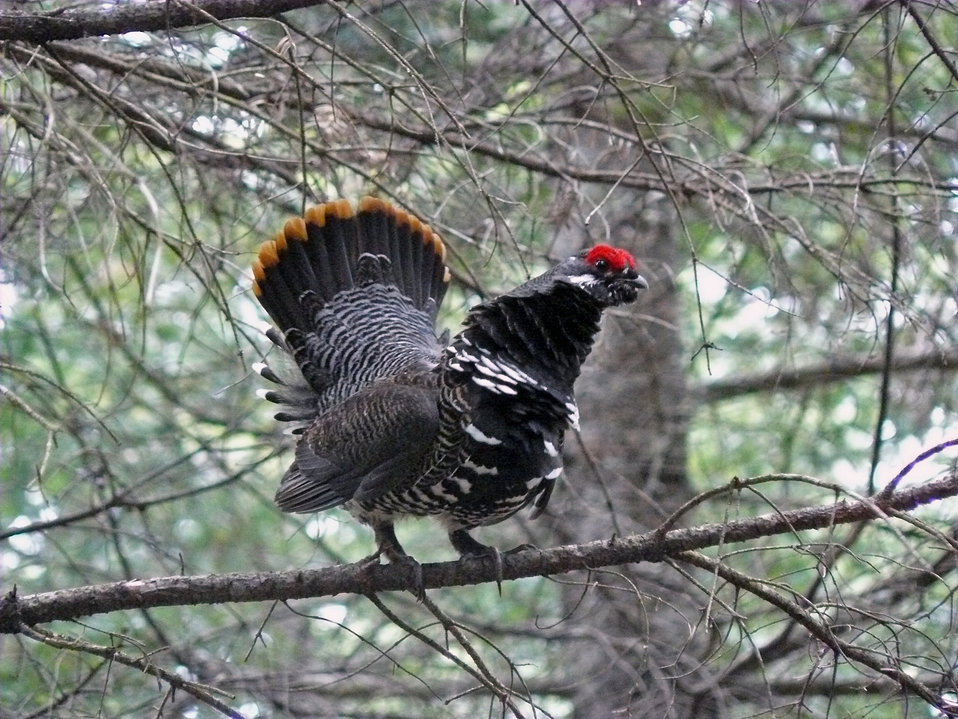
Spruce grouse at Moosehorn National Wildlife Refuge.